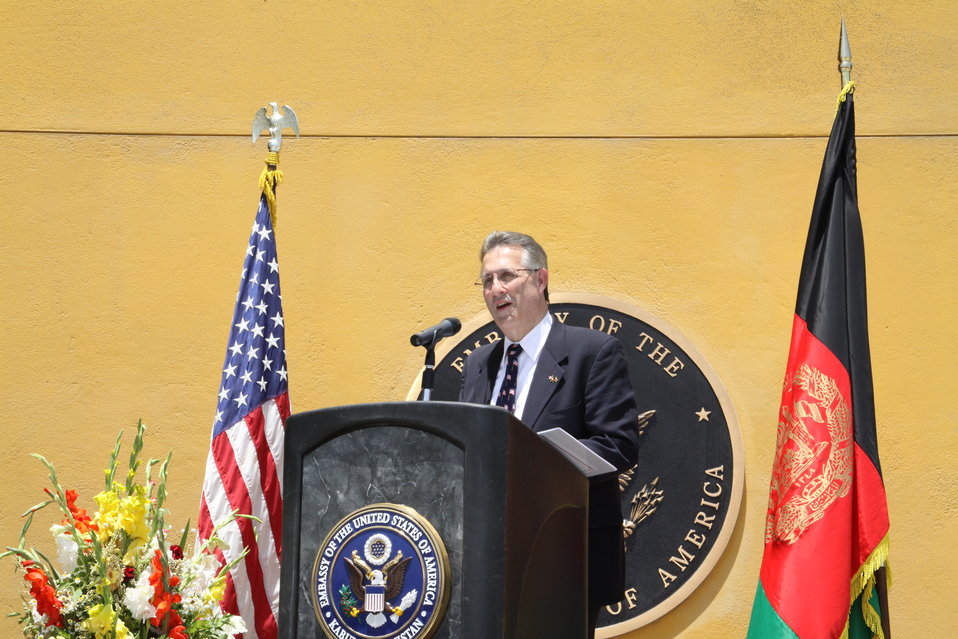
Kabul Official July 4th Celebration